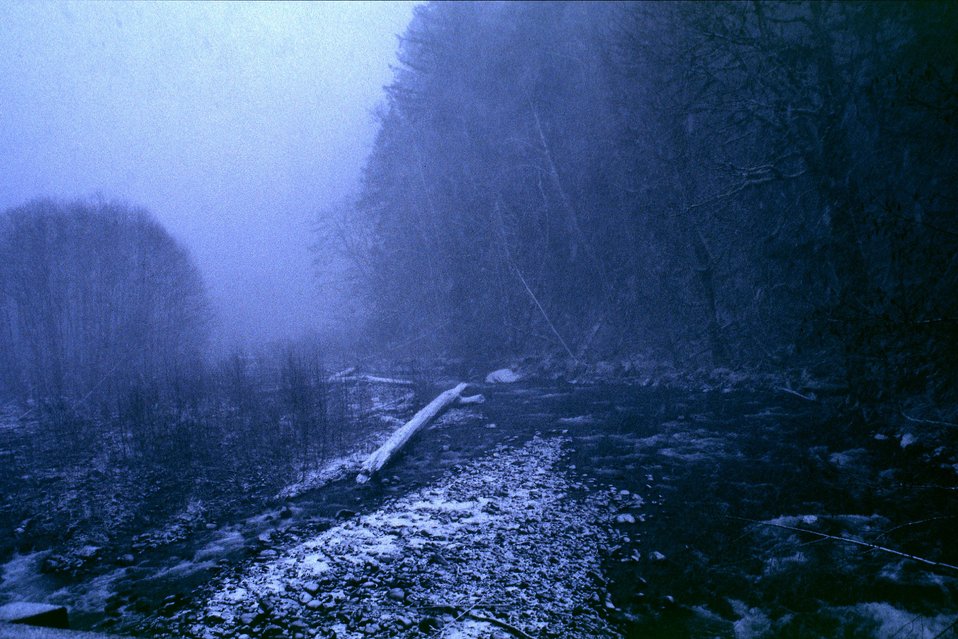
Mid Winter forest scene in the Mollala Corridor.